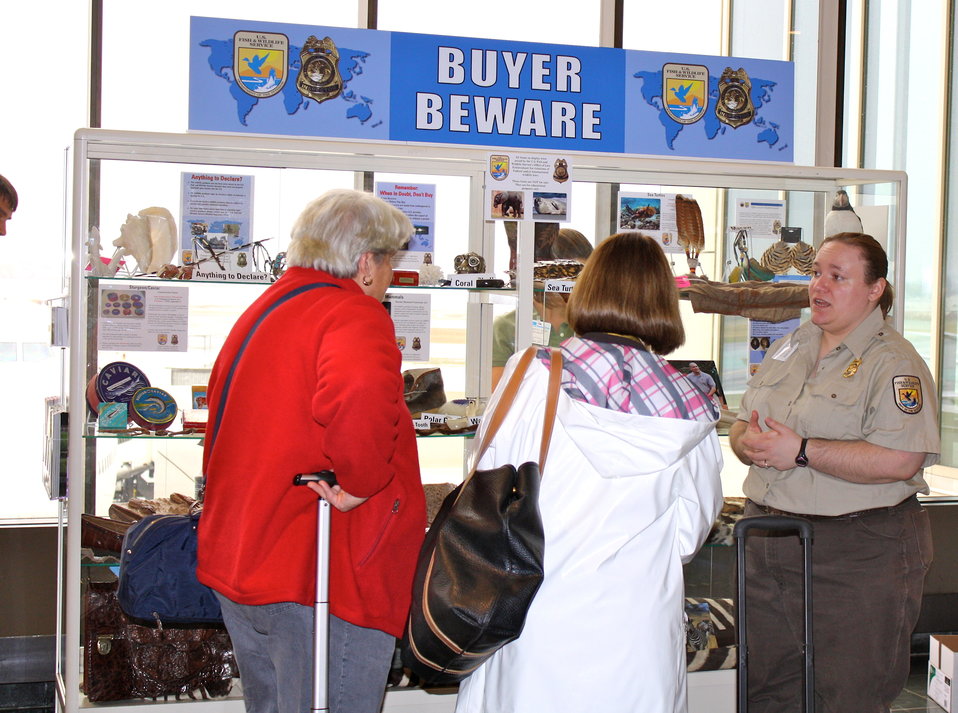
Wildlife Inspector with Travelers